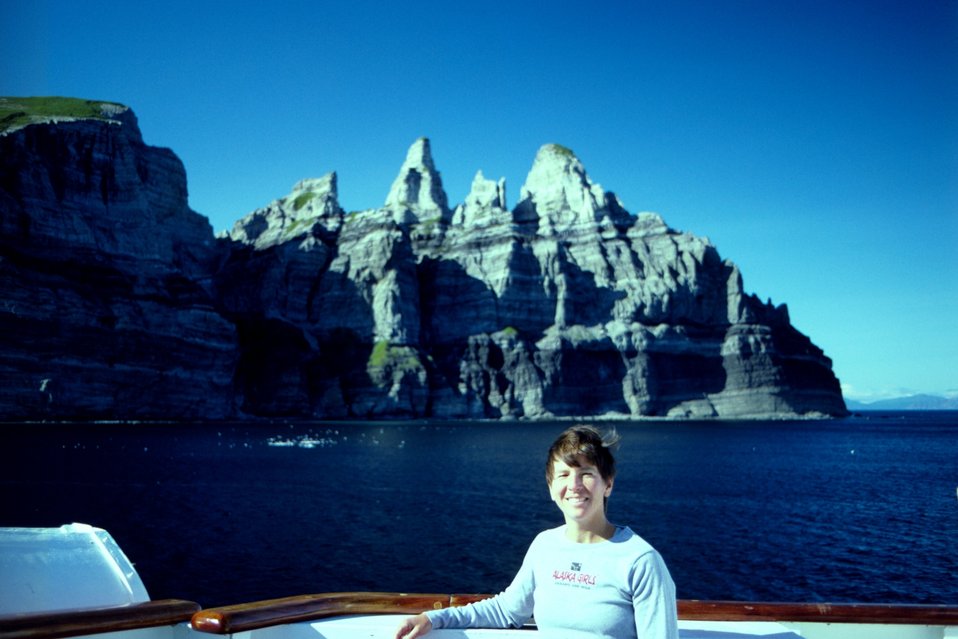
High school teacher on NOAA Ship RAINIER as part of NOAA Teacher at Sea Program.